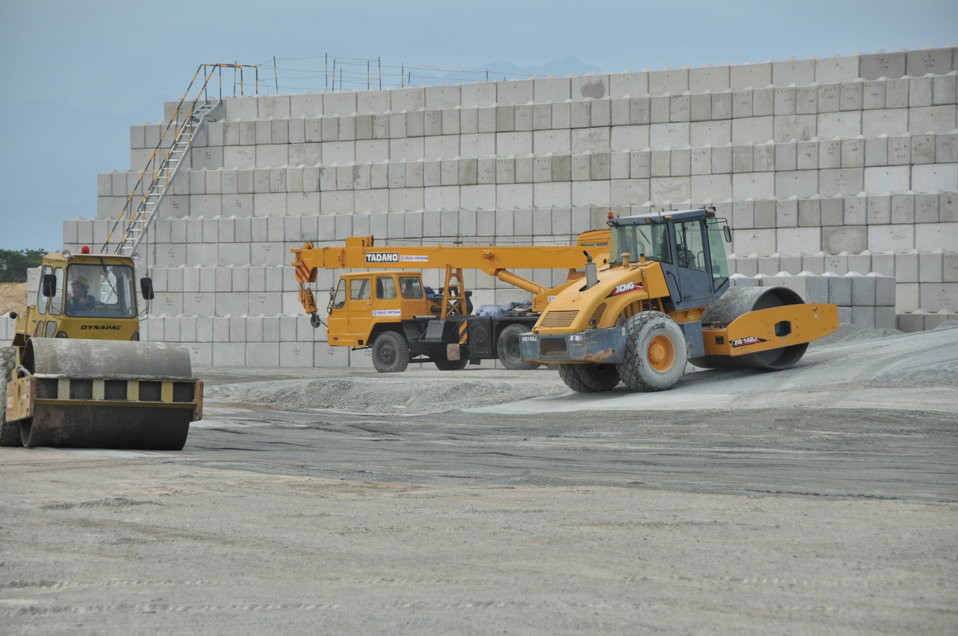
Site construction at the Environmental Remediation of Dioxin Contamination at Danang Airport

Progress at the Danang Airport remediation site
April 23, 2013